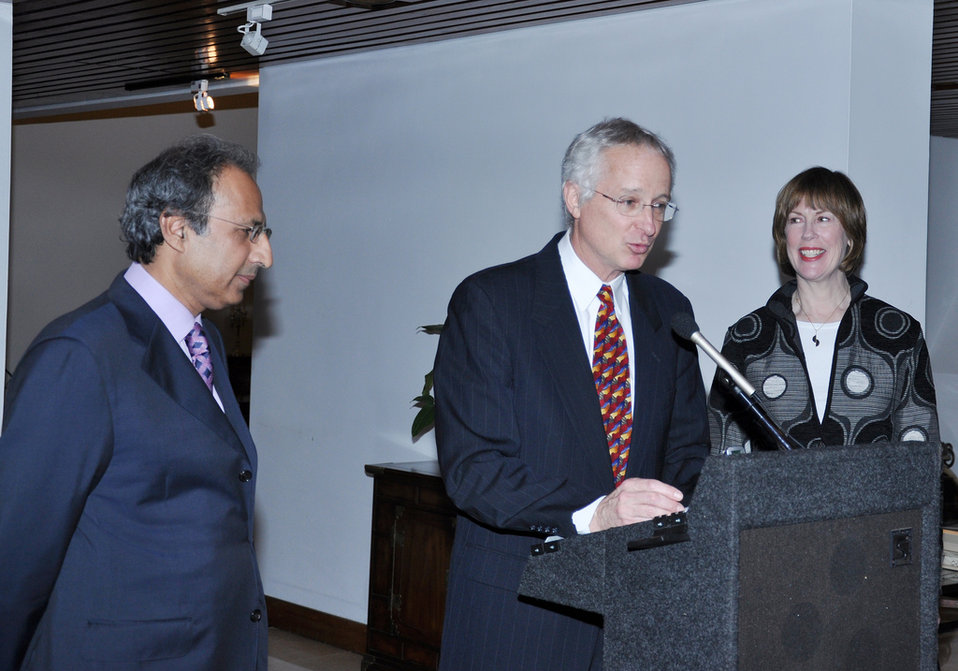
Pakistan Fast Growth 25 Contest

Islamabad, January 24, 2011 - U.S. Ambassador Cameron Munter, with his wife Dr. Marilyn Wyatt and Minister of Finance Dr. Adbul Hafeez Shaikh, congratulating the winners of the Pakistan Fast Growth 25 Contest on January 24, 2011 at a reception at his residence.